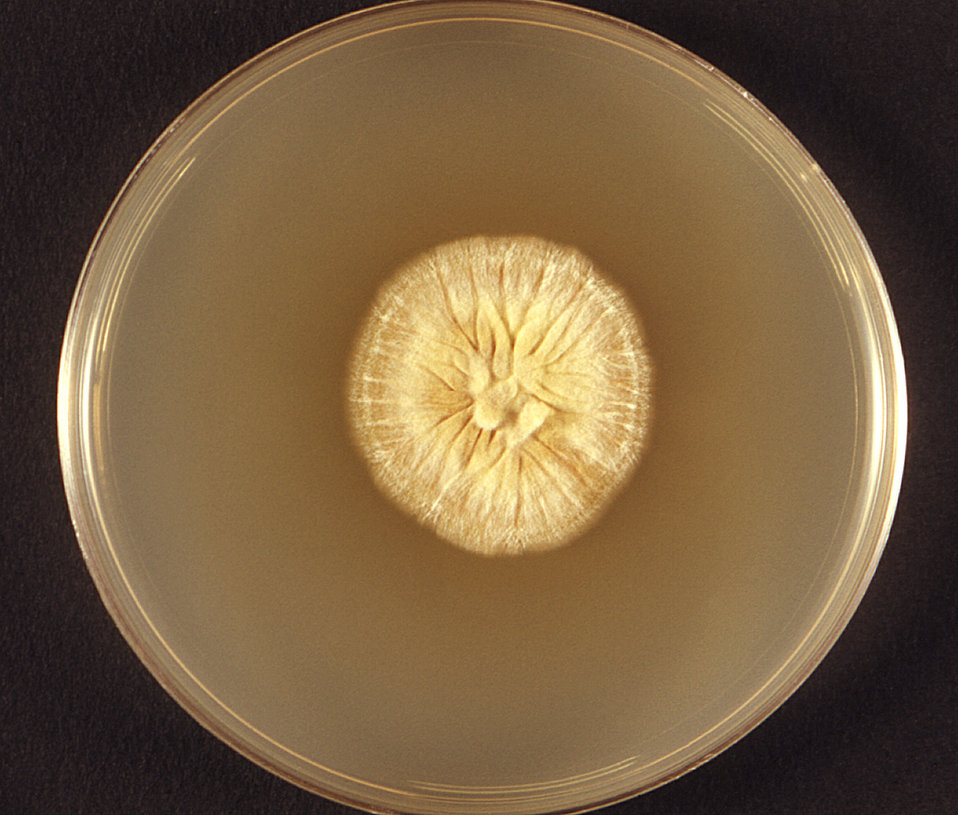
This photograph featured a Petri dish, which had been used to culture a colony of dermatophytic fungus, Microsporum ferrugineum.